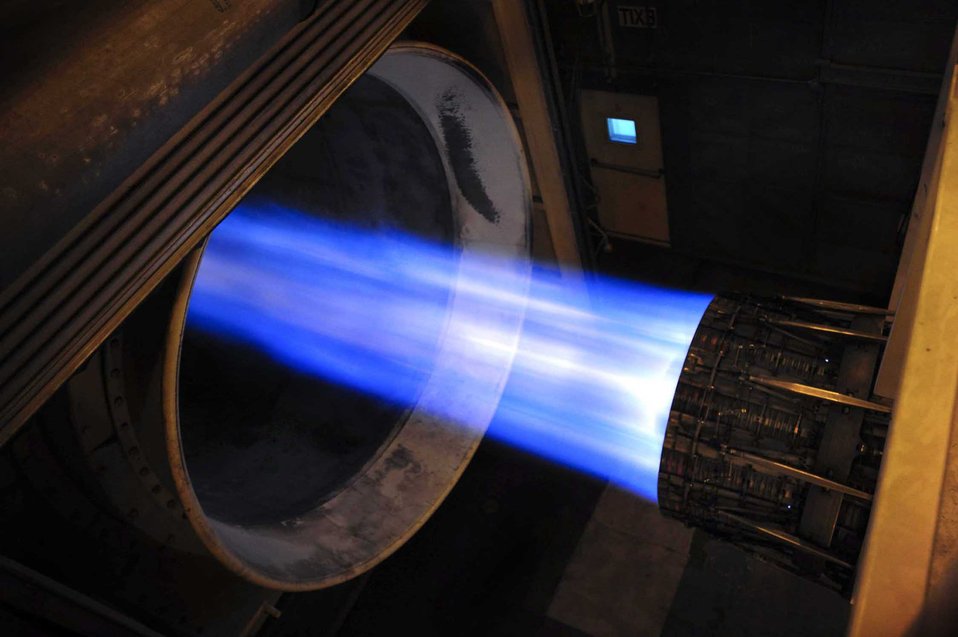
Whooosh

A B-1B Lancer F-101 turbofan engine is tested Oct. 6, 2010, at Ellsworth Air Force Base, S.D. The B-1 has four F-101 engines, with each capable of providing more than 30,000 pounds of thrust with afterburner.